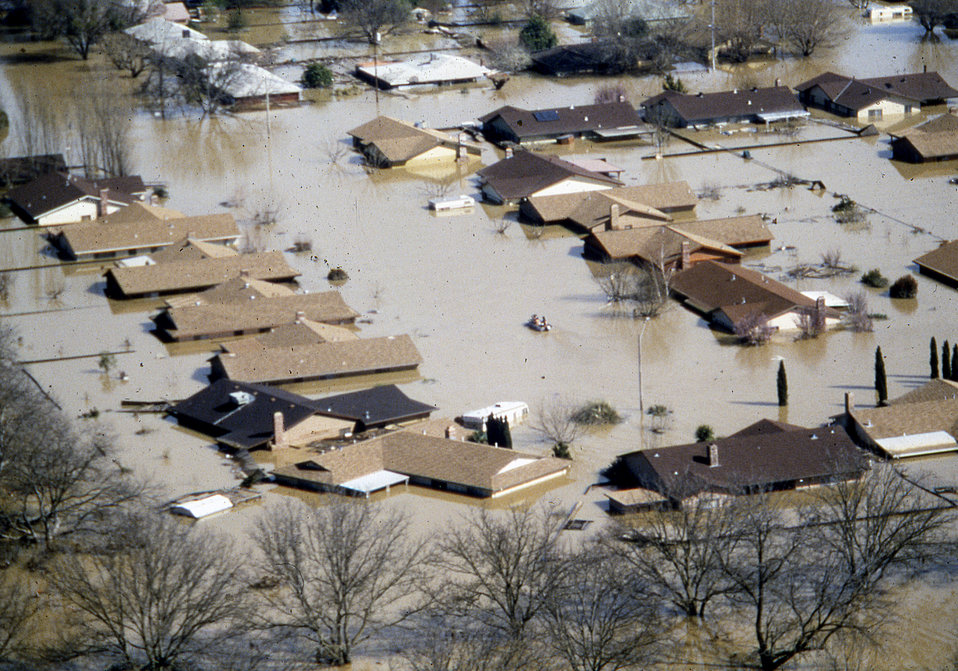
Linda flooding 1986

A flooded neighborhood in Linda, Calif., shown in February 1986